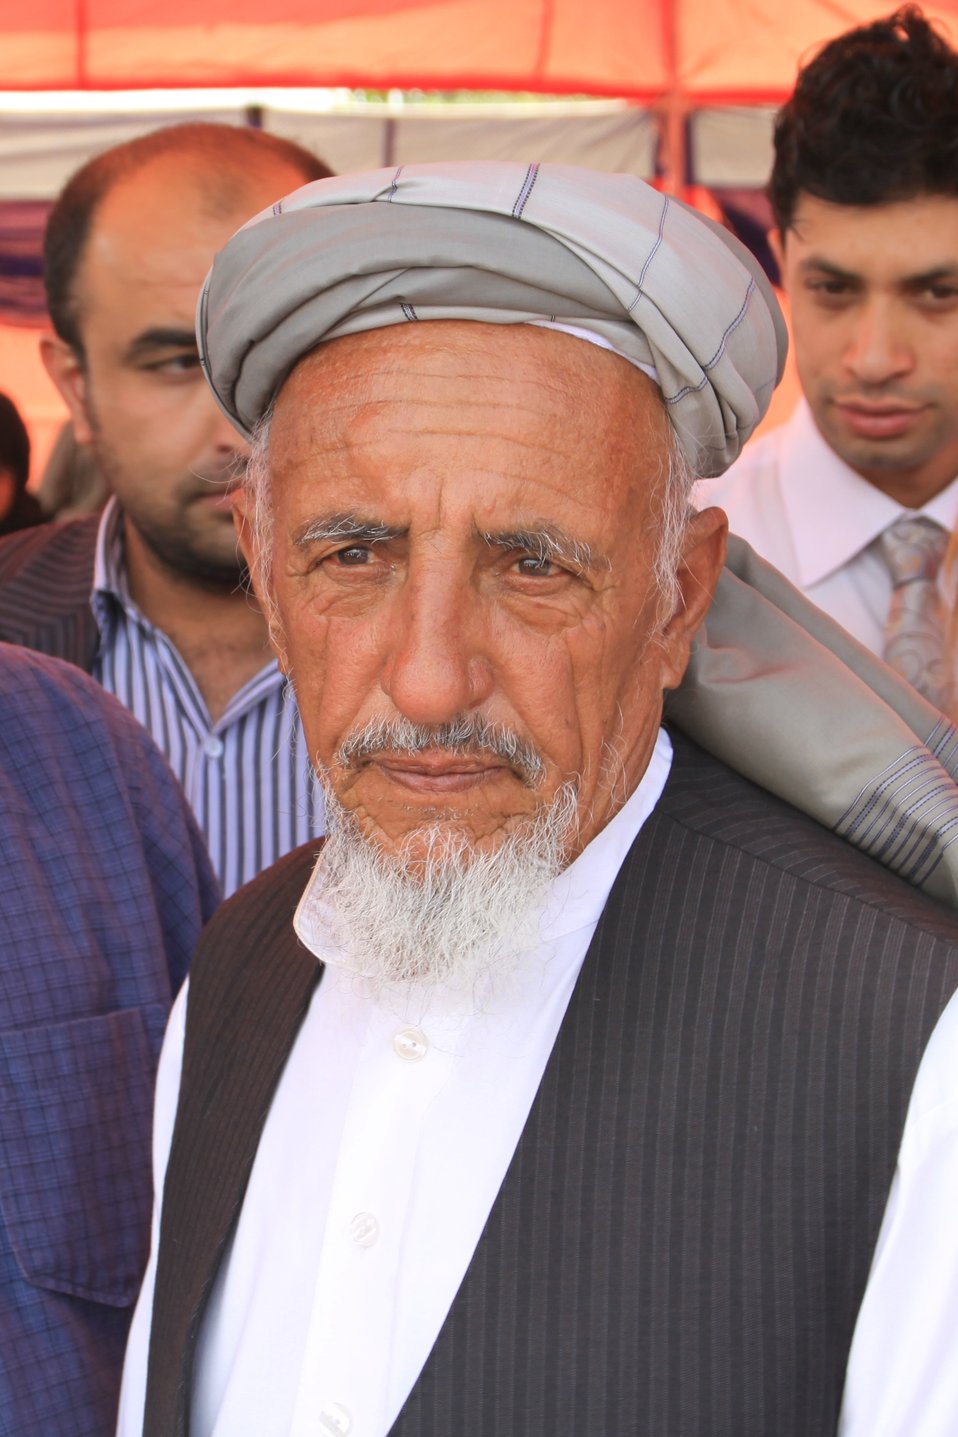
Badam Bagh Farm